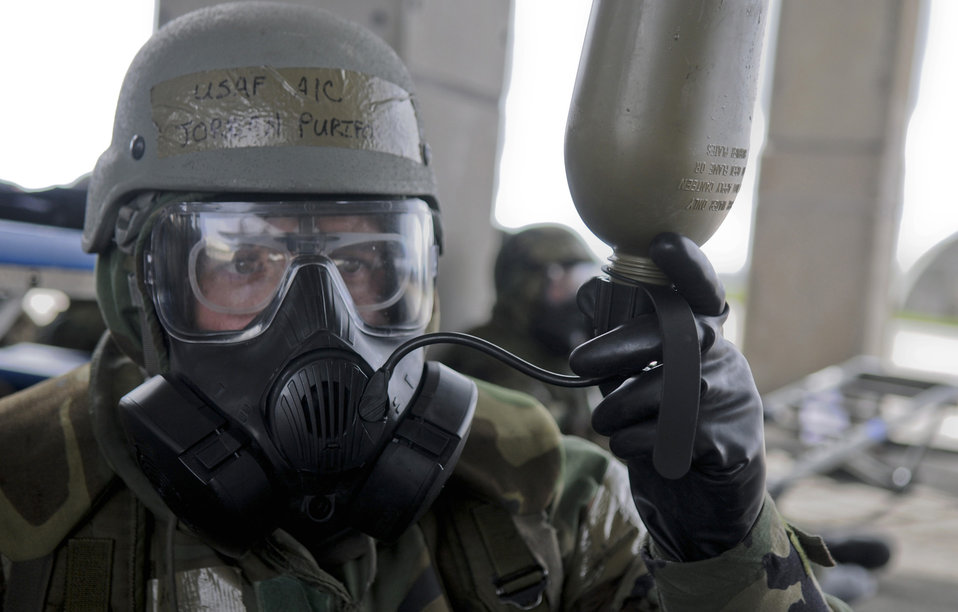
Local operational readiness exercise

Airman 1st Class Jordan Purifoy drinks from his canteen May 19, 2011, during Beverly High at Kadena Air Base, Japan. Airman Purifoy is assigned to the 18th Aircraft Maintenance Squadron.